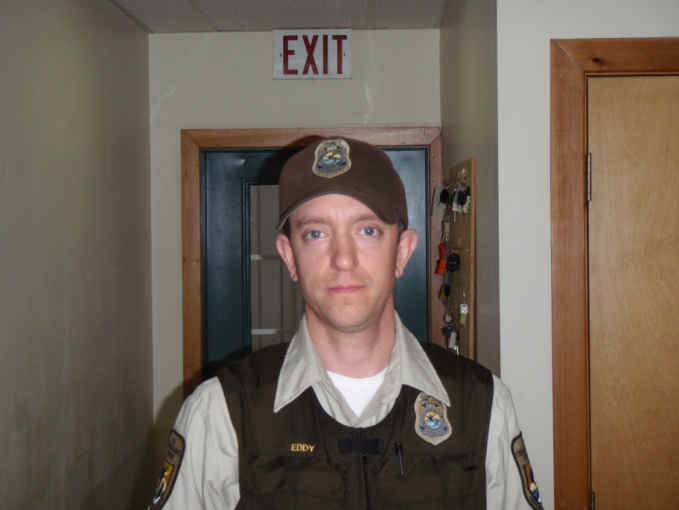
Jay Eddy, Alligator River NWR Refuge Law Enforcement Officer, served in the U. S. Navy from 1993 to 1997.